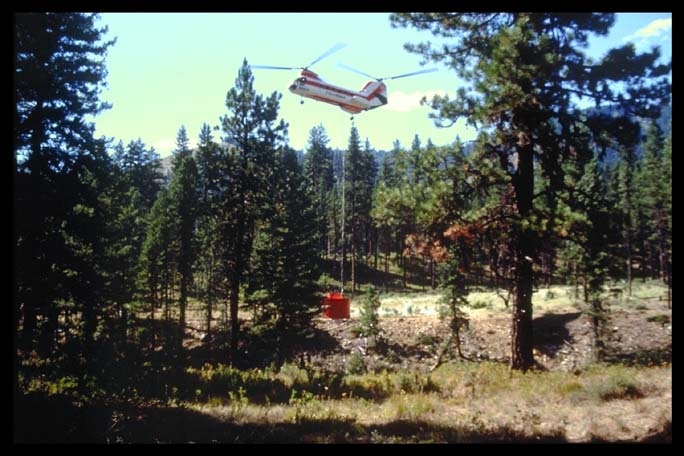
Helicopter with bucket